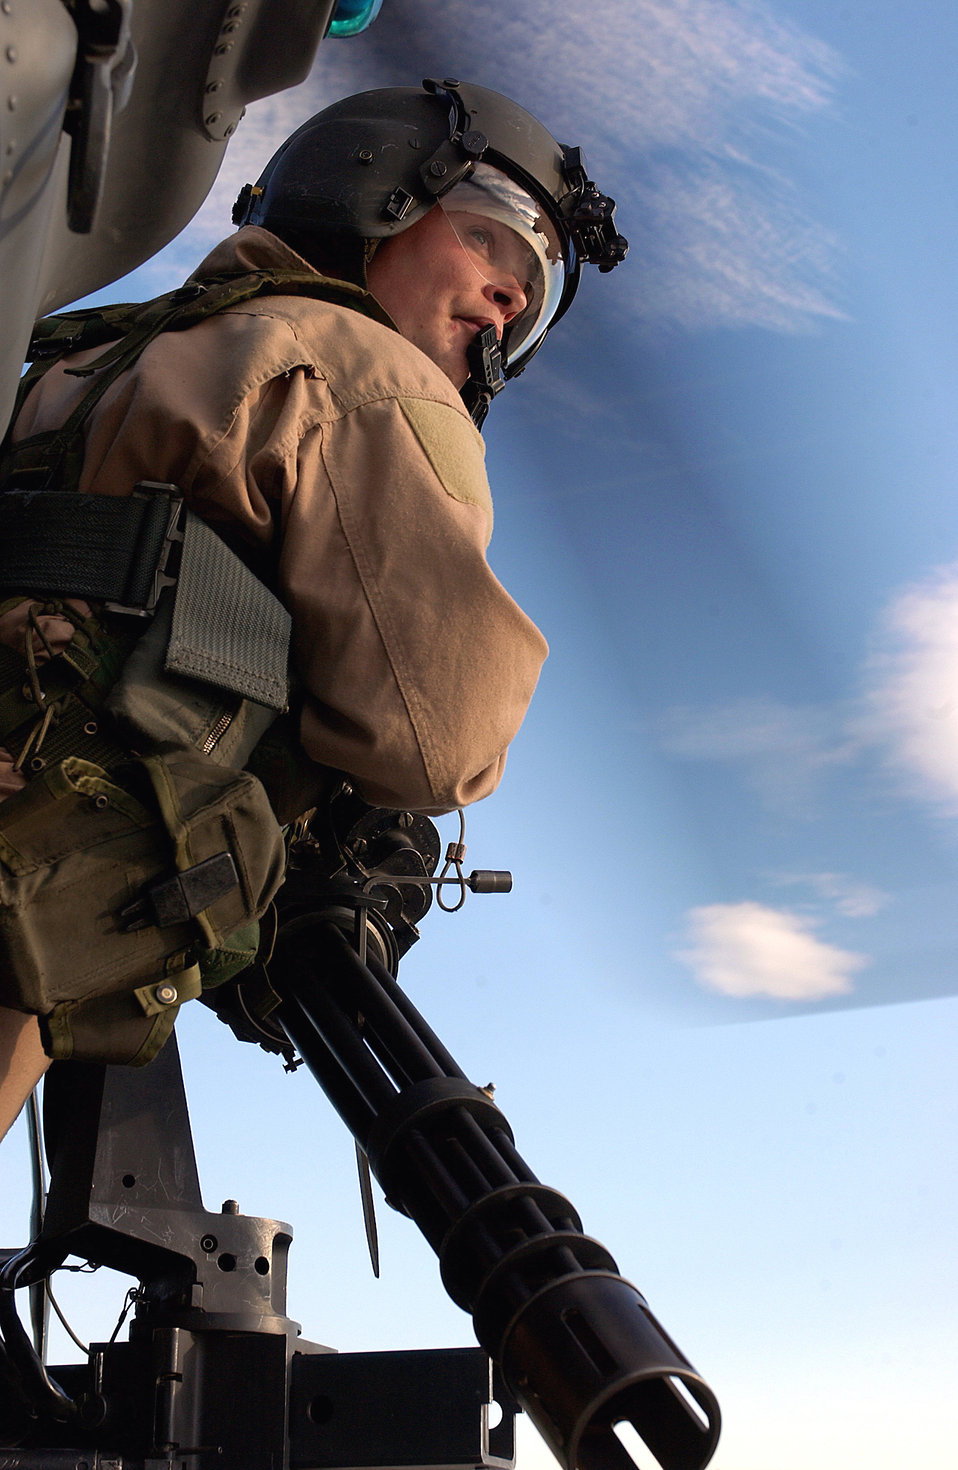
Watching for trouble

NAVAL AIR STATION FALLON, Nev. -- Staff Sgt. Zachary Gyokeres, a flight engineer, 41st Rescue Squadron, Moody Air Force Base, Ga., watches for power lines and other hazards during a training exercise at Desert Rescue XI, Aug. 13th. The joint-service combat search and rescue training exercise simulates downed aircrew behind enemy lines and allows airmen to practice rescue-related missions.